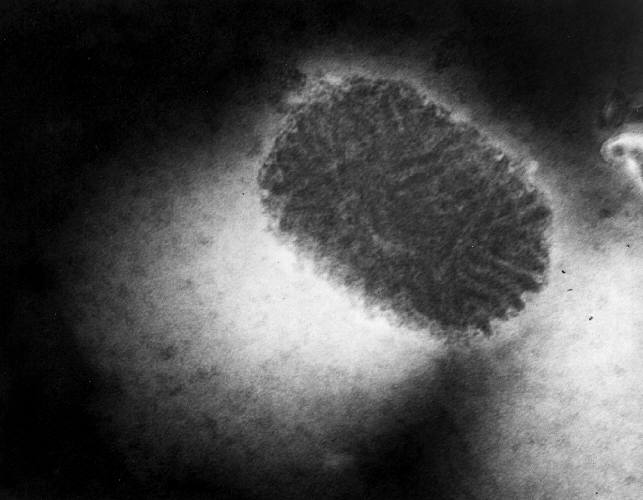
This transmission electron micrograph (TEM) revealed some of the ultrastructural morphology exhibited by a poxvirus, molluscum contagiosum, virion.